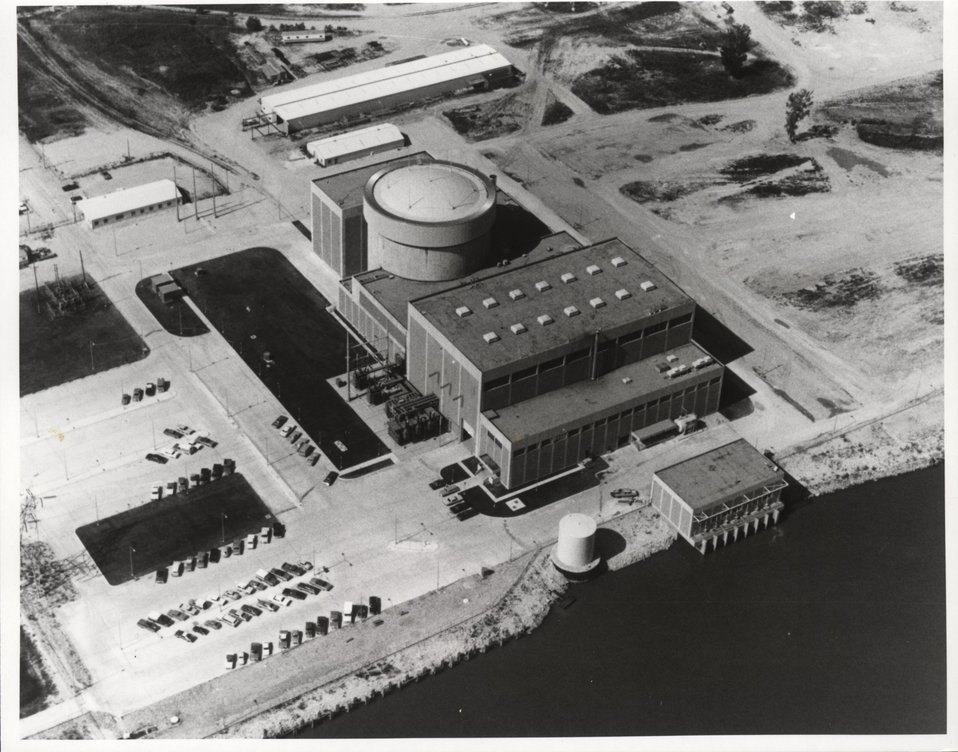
Aerial view of the Fort Calhoun Station, unit 1, which is located 19 miles north of Omaha, Nebraska, on the west bank of the Missouri River. Circa 1974.